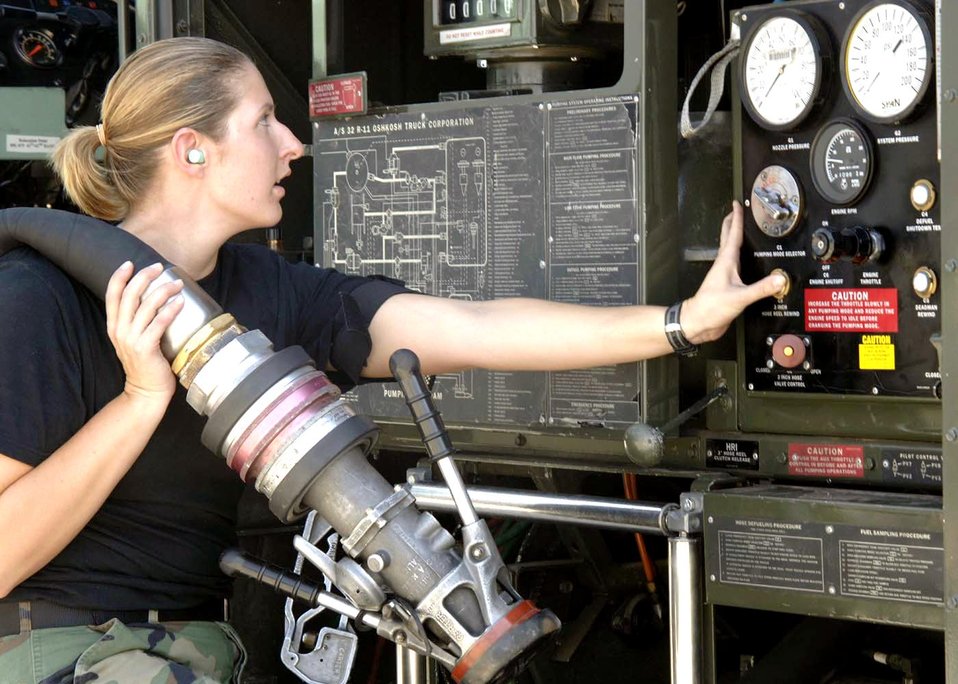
Quality fuel

DAVIS-MONTHAN AIR FORCE BASE, Ariz. -- Senior Airman Amy Finkbeiner rewinds a fuel hose after an aircraft fuel servicing here. She is a fuels apprentice with the 355th Logistics Readiness Squadron.